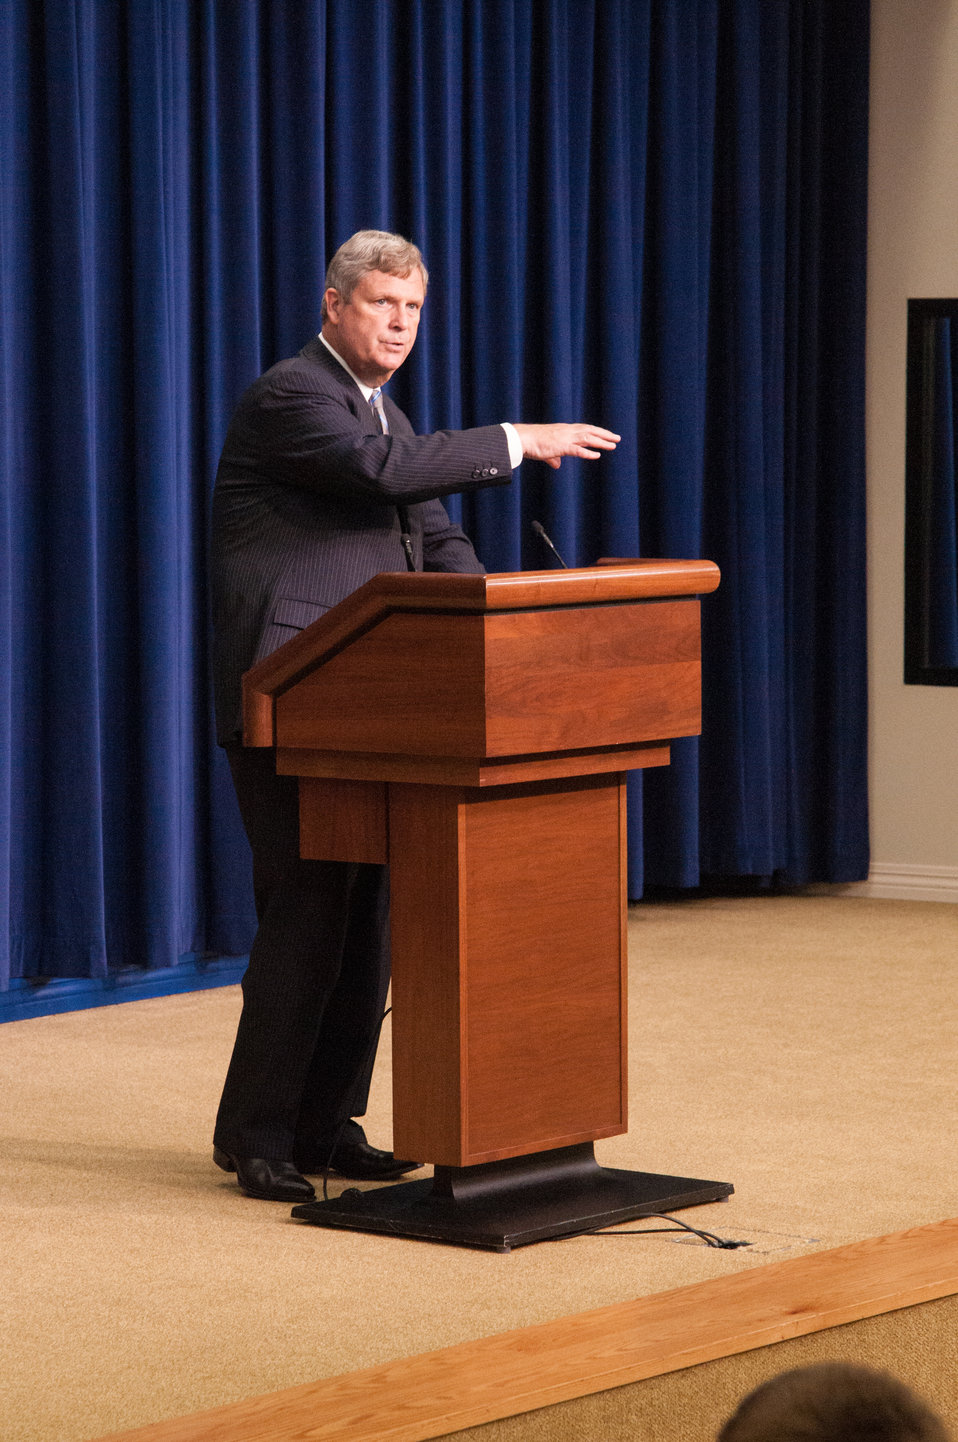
Agriculture Secretary Tom Vilsack speaks at a meeting of the White House Rural Council to an audience of the National State President’s Conference of the FFA on Wednesday, Jul. 24, 2013 in Washington, D.C. Secretary Vilsack took questions from the audience and discussed international, national and agricultural production topics with the FFA State President’s.